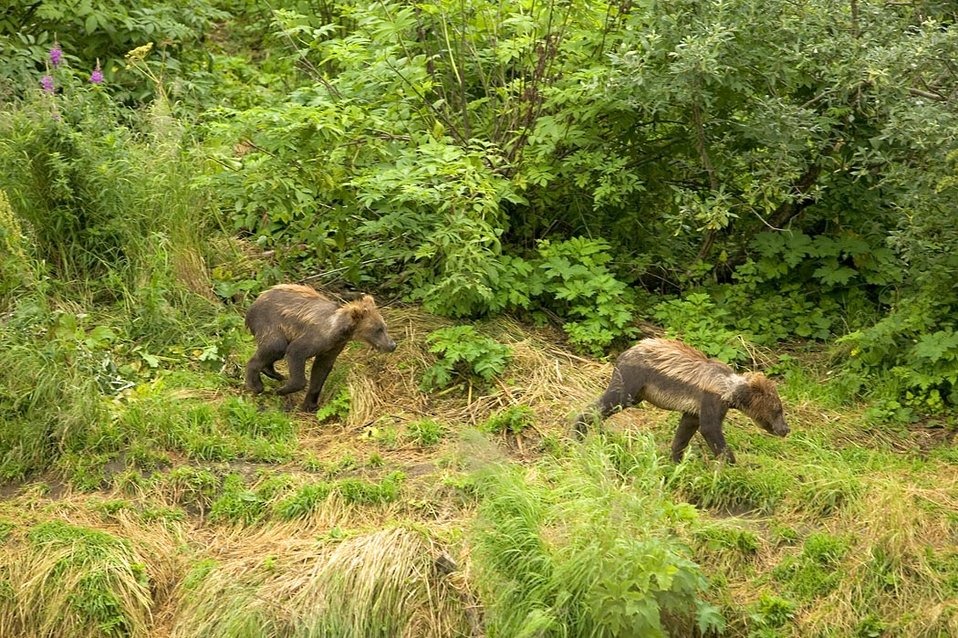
Brown bear cubs running through the brush

Grizzly bear cubs running through the brush in the Kodiak National Wildlife Refuge.